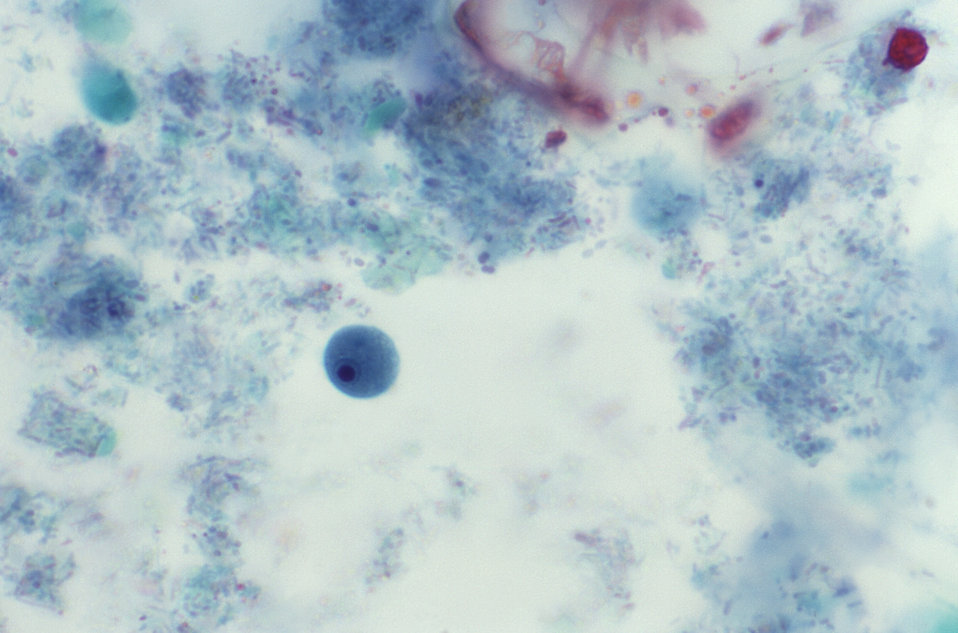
This trichrome-stained photomicrograph revealed the presence of a parasitic Iodamoeba b�ii trophozoite, however, in this case, there were no achromatic granules visible, which were visible in the trophozoite pictured in PHIL 14786.